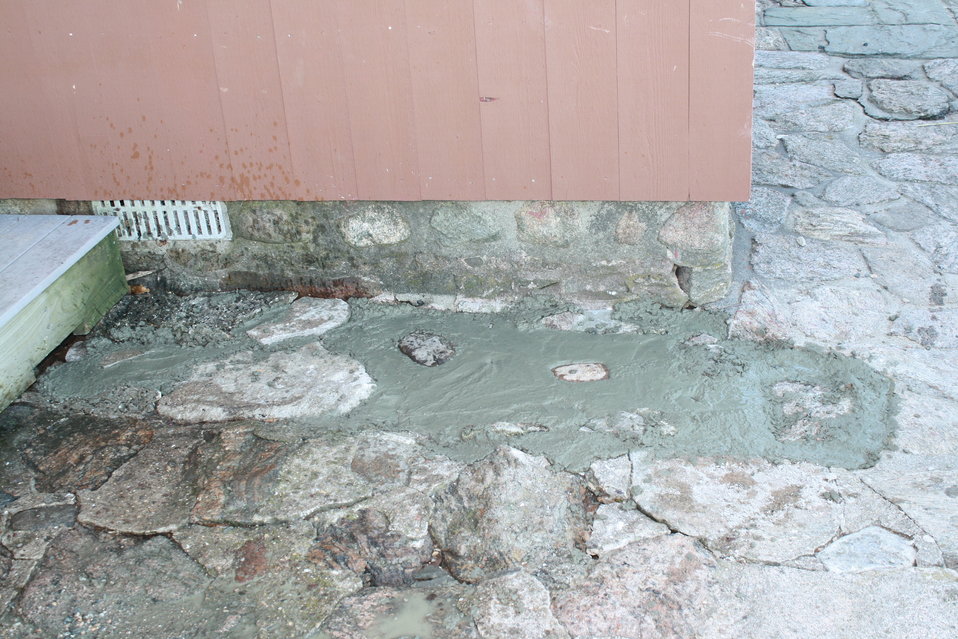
Beginning repairs at Stewart B. McKinney National Wildlife Refuge (CT)

Refuge staff and crews repaired disturbed ground and foundation that was damaged after Hurricane Sandy.